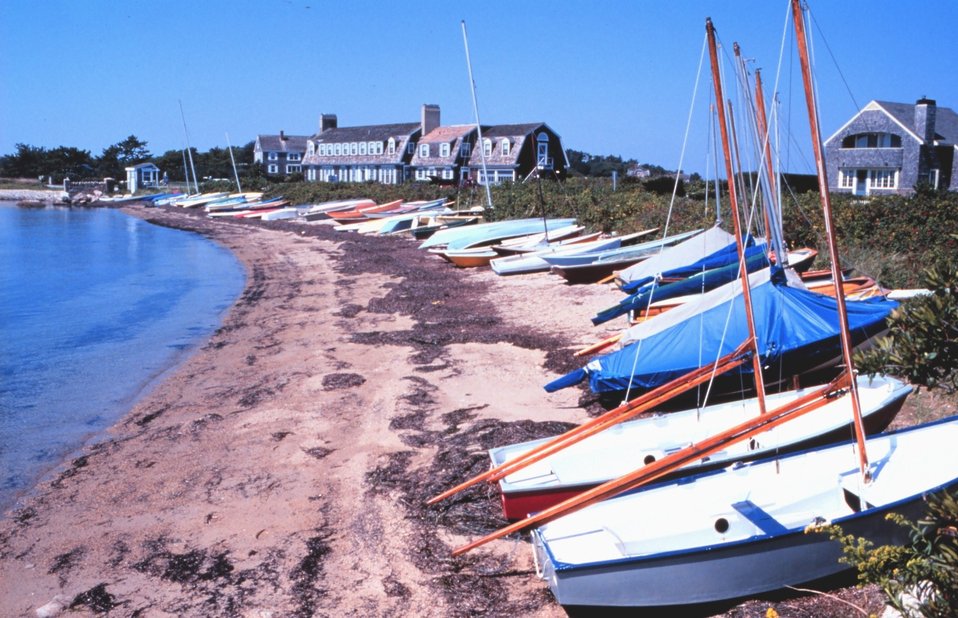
Woods Hole Yacht Club